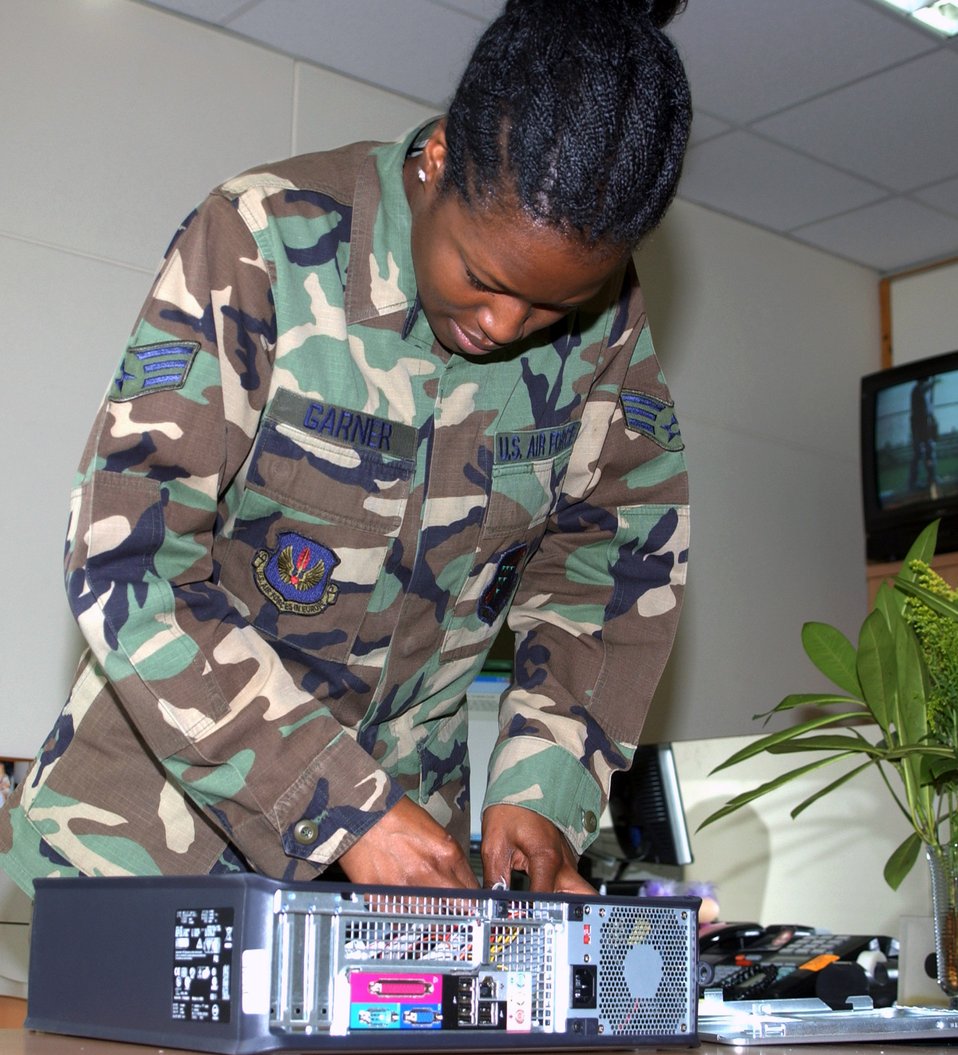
Help desk first stop for most computer issues

Senior Airman Quarteeya Garner checks a computer power supply at Incirlik Air Base, Turkey. Airman Garner is a 39th Mission Support Group client systems administrator at Incirlik AB.